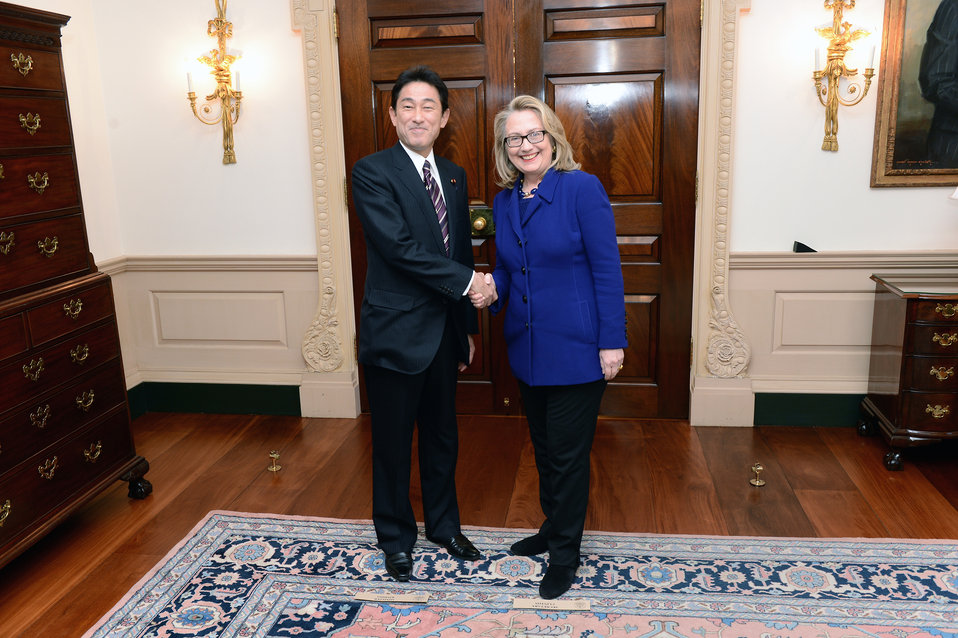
Secretary Clinton Meets With Japanese Foreign Minister Kishida

U.S. Secretary of State Hillary Rodham Clinton meets with Japanese Foreign Minister Fumio Kishida at the U.S. Department of State in Washington, D.C. on January 18, 2013.